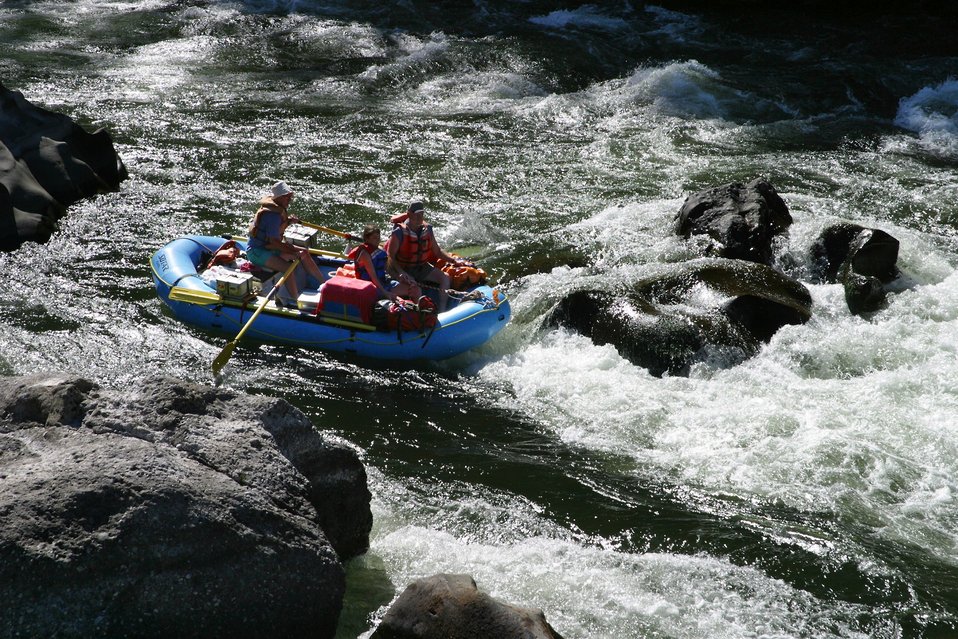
Blossom Rapids.